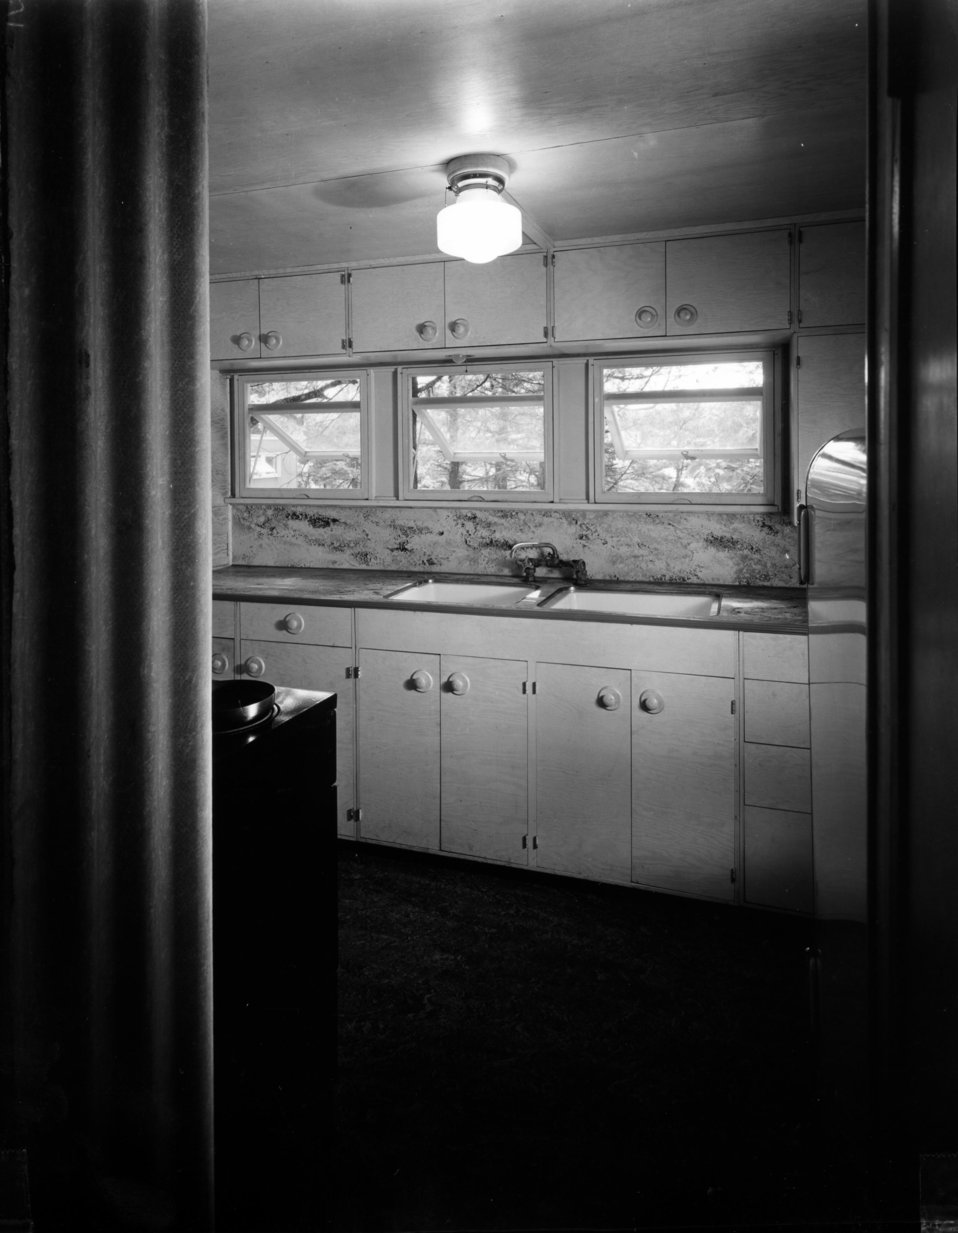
Housing at Oak Ridge